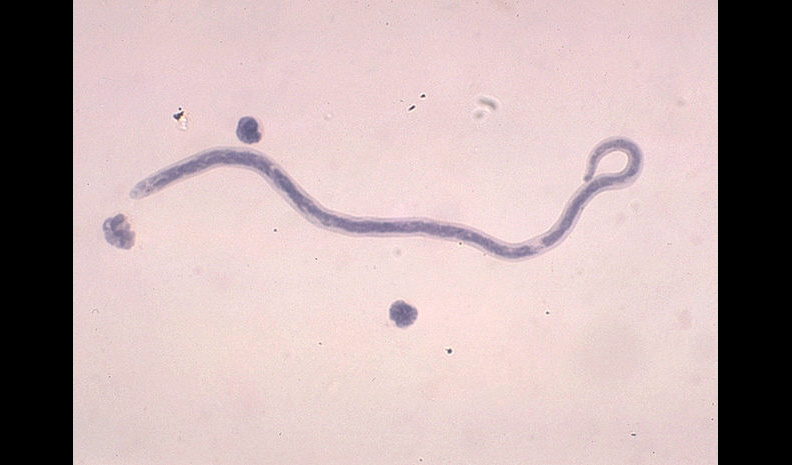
Dipetalonema perstans, agent of filariasis.